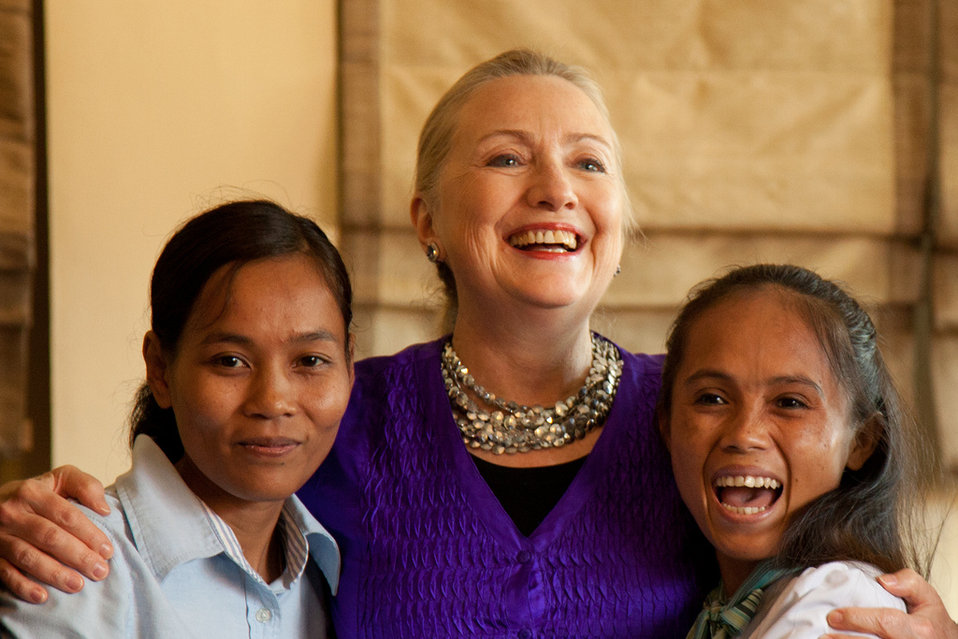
Secretary Clinton With Young Women at the Labor Roundtable

U.S. Secretary of State Hillary Rodham Clinton speaks with participants of the Lower Mekong Initiative Women's event in Siem Reap, Cambodia, on July 13, 2012.